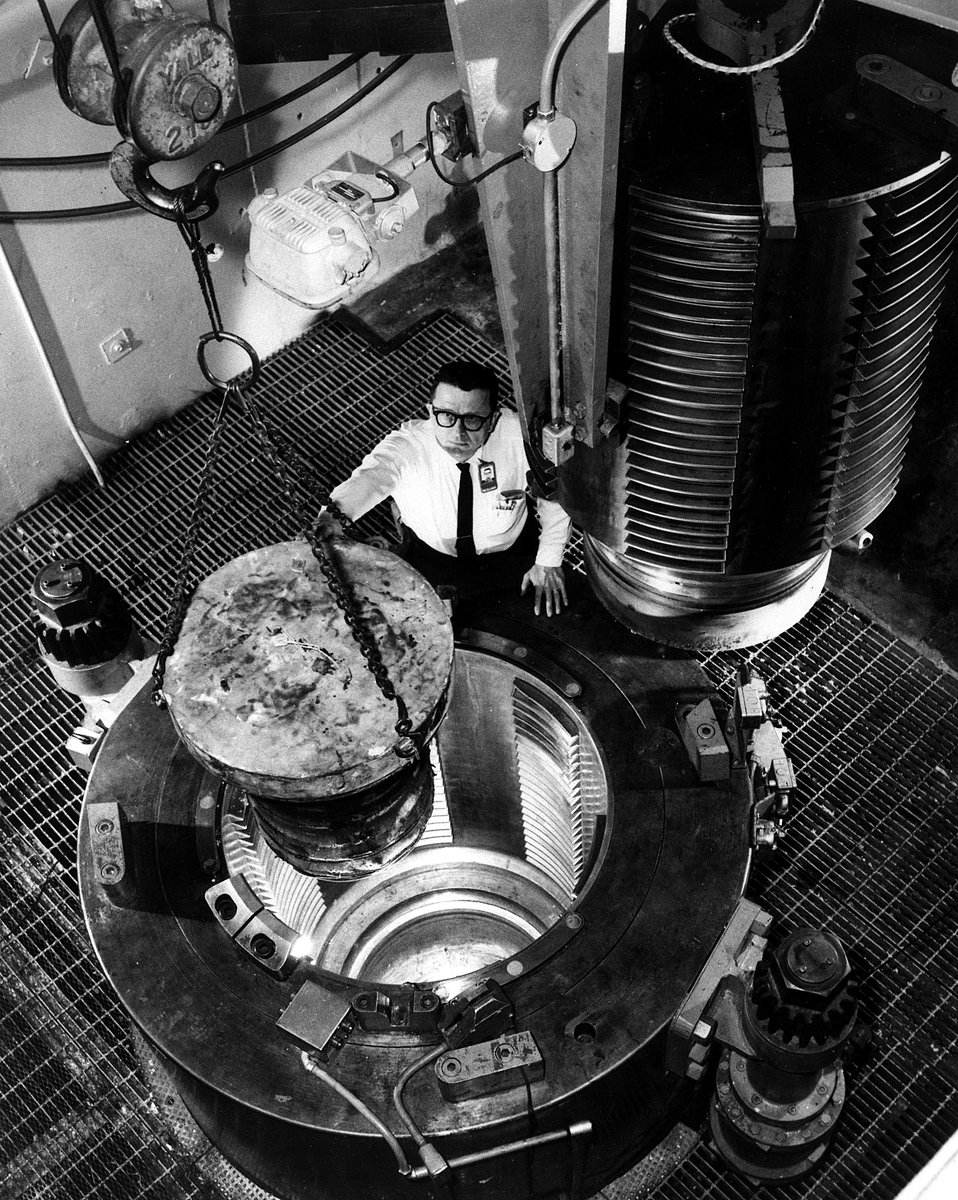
This huge gas autoclave at the Oak Ridge Y-12 Plant has recently begun operation as a materials research tool in the field of powder metallurgy. Circa 1966.